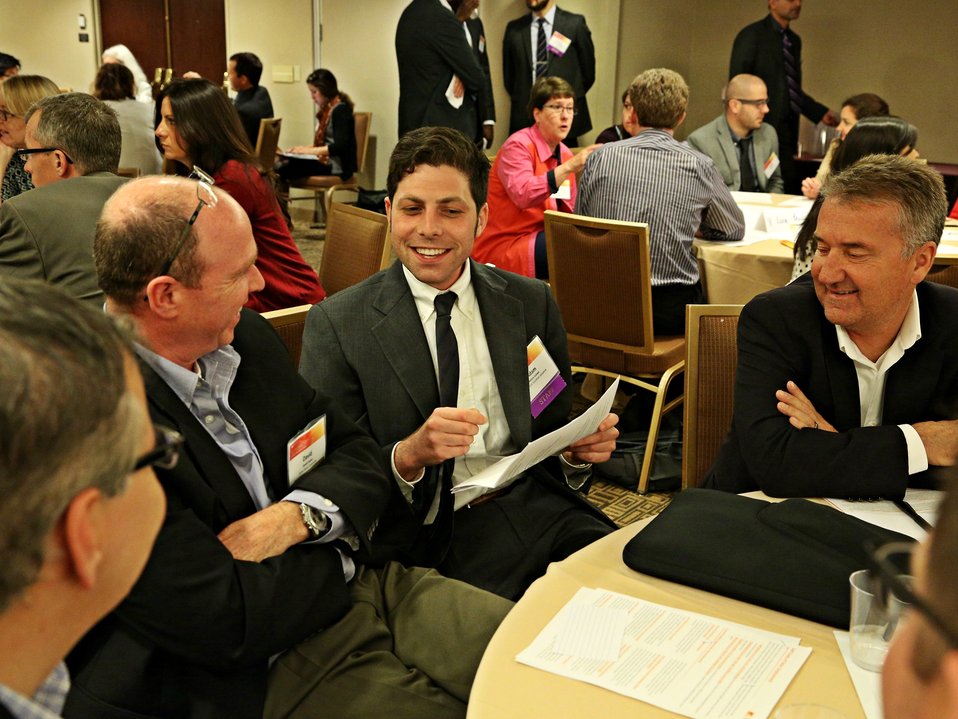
Day 2 Subprogram Overviews 5

SunShot staff and attendees chat at a Subprogram Overview session.